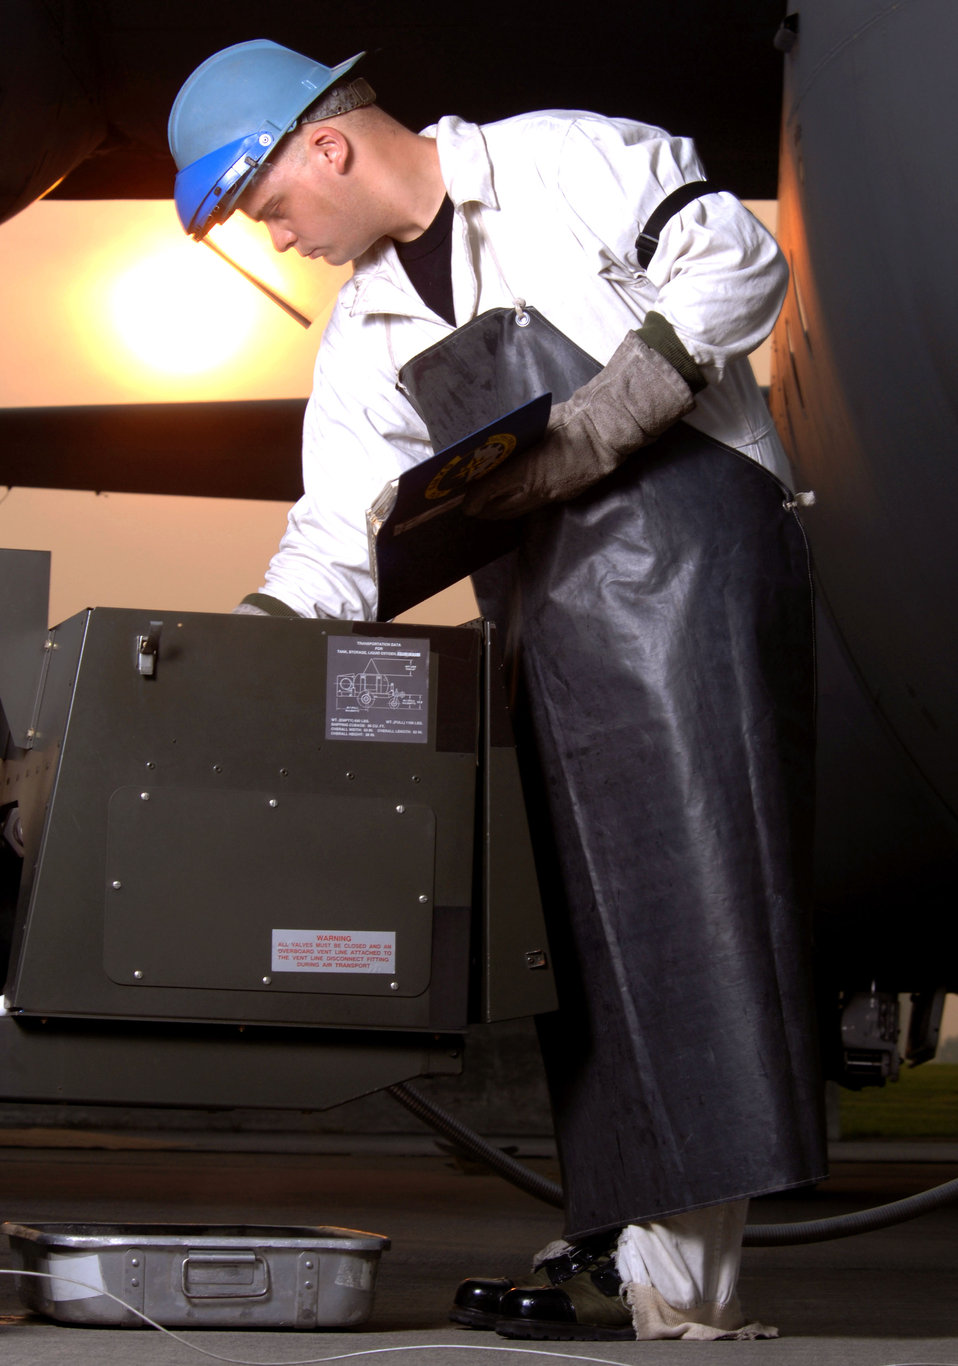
Breathe a little easier

YOKOTA AIR BASE, Japan -- Donned in safety gear, Senior Airman Travis Hutts uses a liquid oxygen cart to service a C-130 Hercules. Liquid oxygen is used by aircrews to help them breathe at high altitude. Airman Hutts is a crew chief with the 374th Maintenance Squadron here.